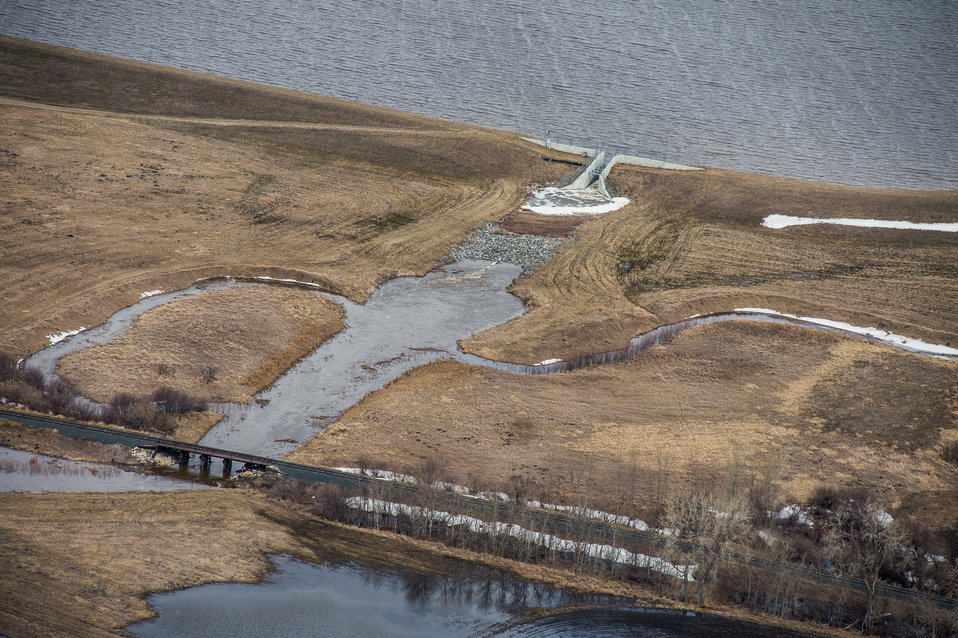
Outlet structure on Warren Watershed Off channel storage site in Marshall County, MN, Wednesday, May 1, 2013. For information about this and other programs from the USDA Red River Basin Initiative (RRBI) please see www.mn.nrcs.usda.gov/news/features13/RRBI.html.